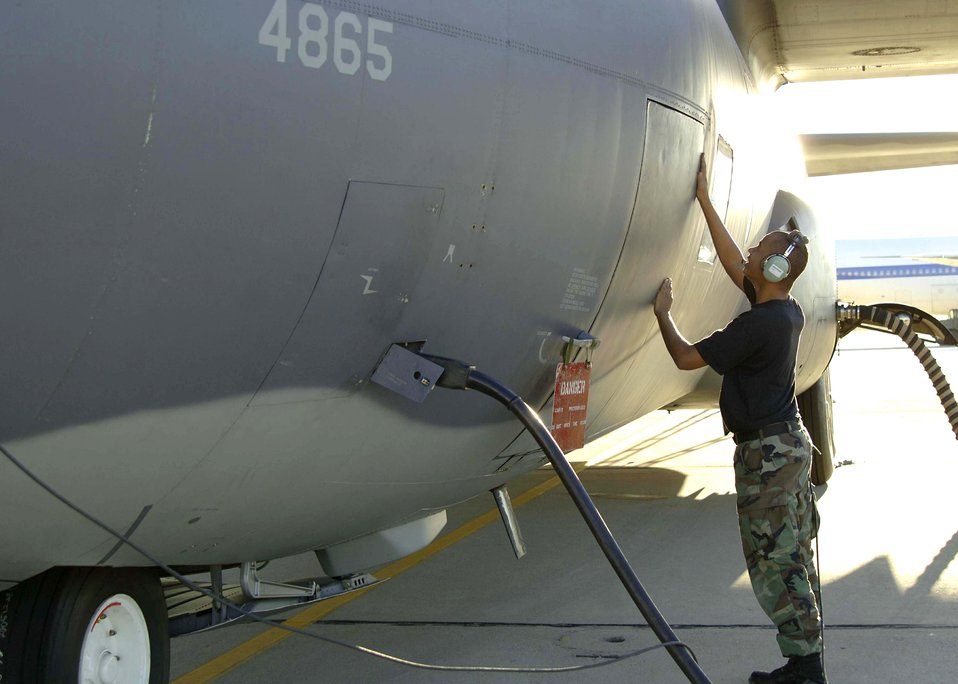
Keeping the fleet going

DAVIS-MONTHAN AIR FORCE BASE, Ariz. (AFPN) -- Airman 1st Class Michael Boylan checks for pressurization leaks on the entry door of a HC-130P during a maintenance inspection. Airman Boylan is an electro-environmental apprentice with the 563rd Maintenance Squadron.